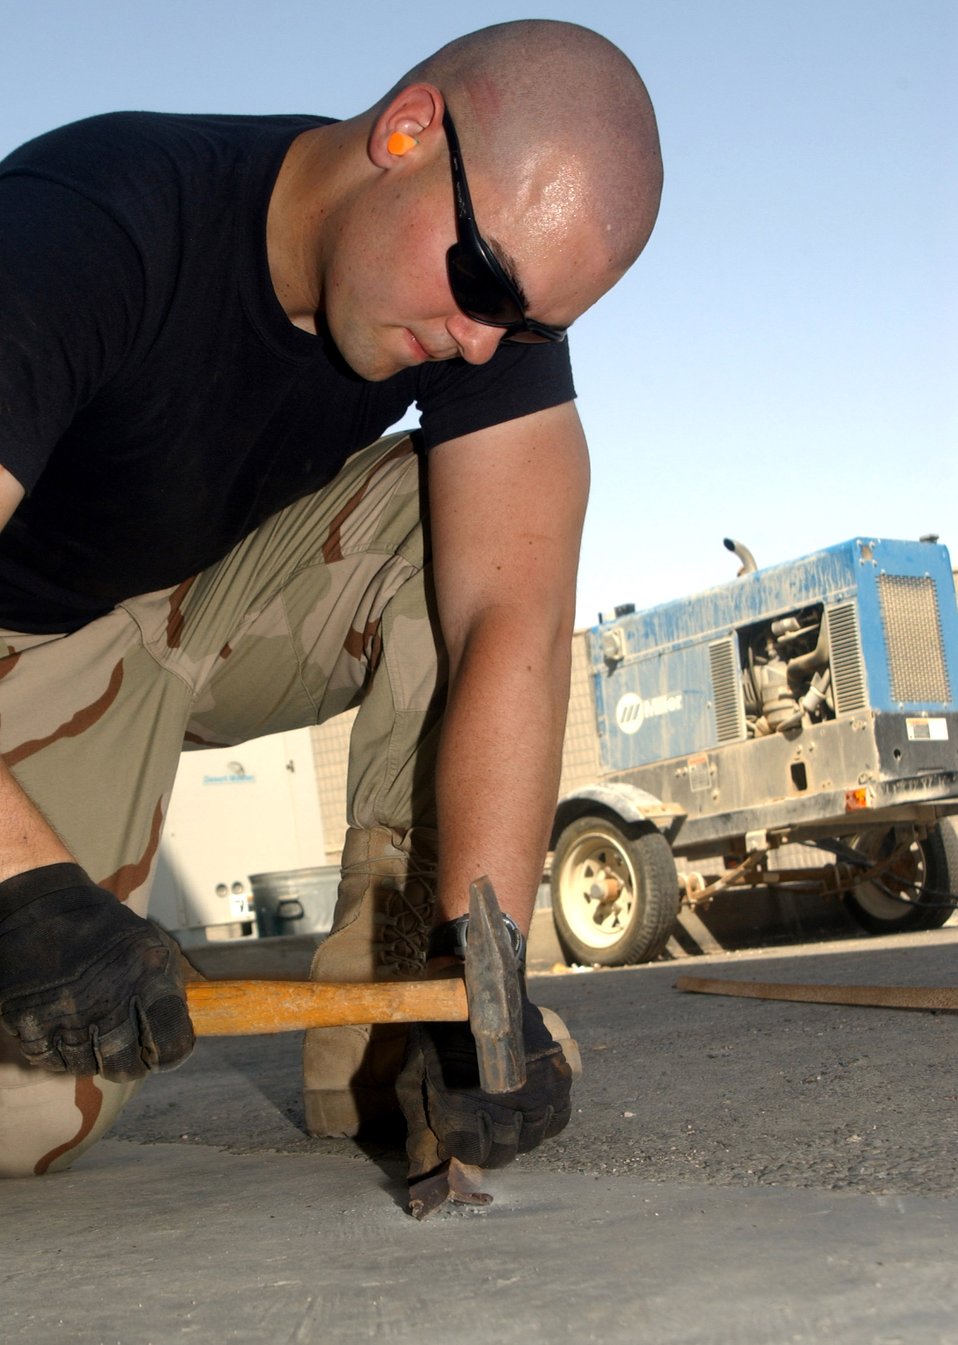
Weld done

Senior Airman Kyle O'Hara straightens a piece of angle iron Oct. 11 before welding it back on to a frame he was repairing at a forward-operating base in Southwest Asia. Airman O'Hara, deployed from Yokota Air Base, Japan, is assigned to the 380th Expeditionary Civil Engineer Squadron.